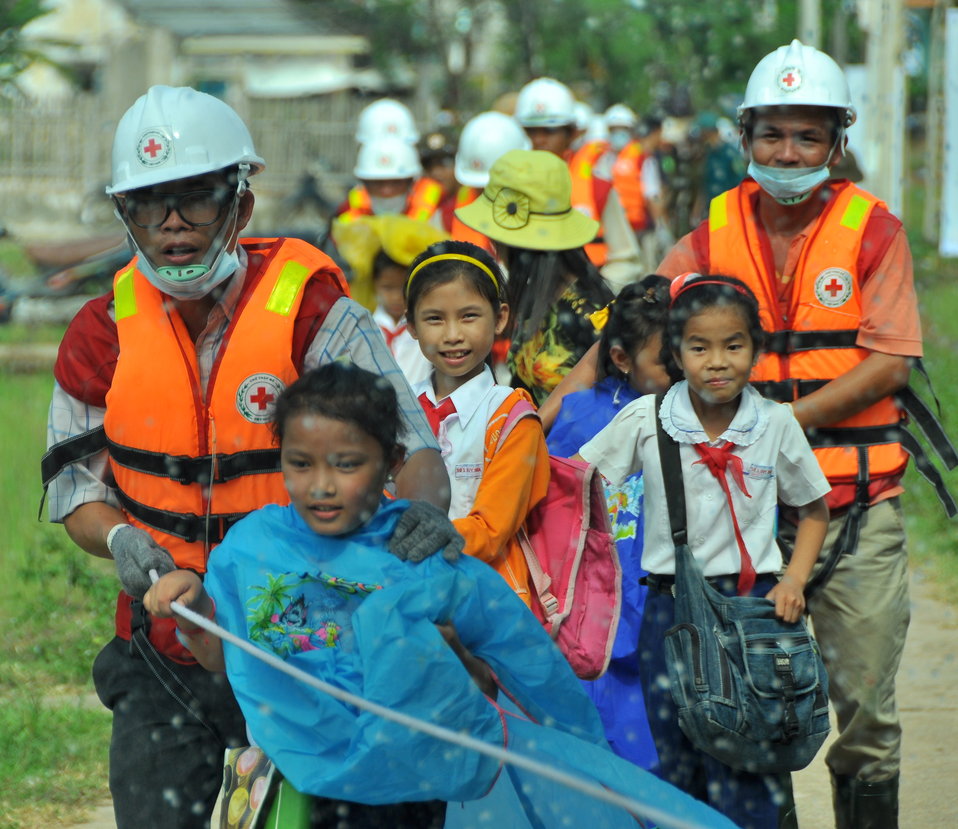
USAID, Red Cross Support Disaster Response Drill in Duy Hoa Commune, Quang Nam Province

Duy Hoa Commune, Quang Nam Province
December 5, 2012